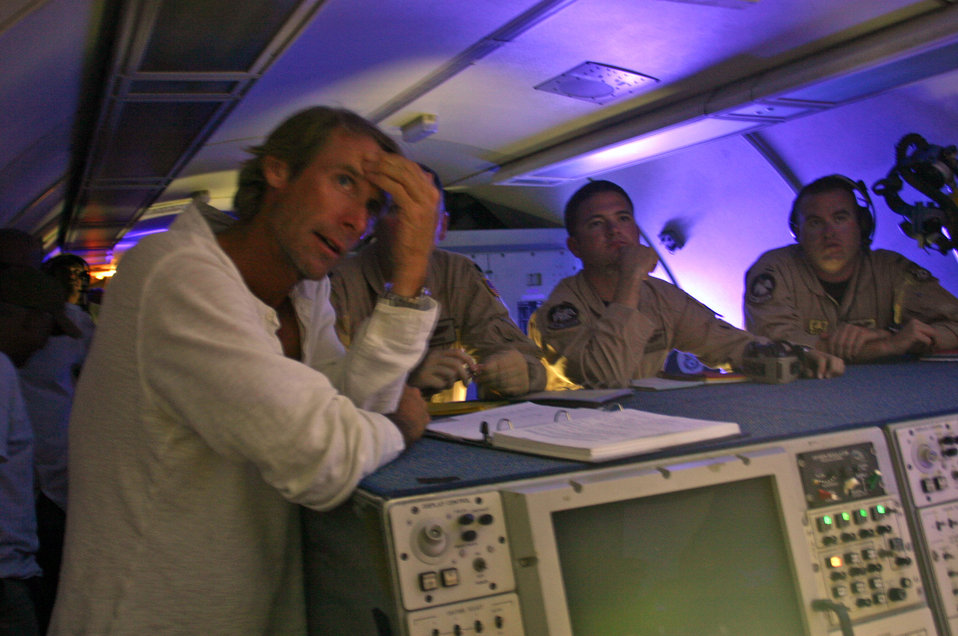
Tinker Airmen make mark in 'Transformers: Revenge of the Fallen'